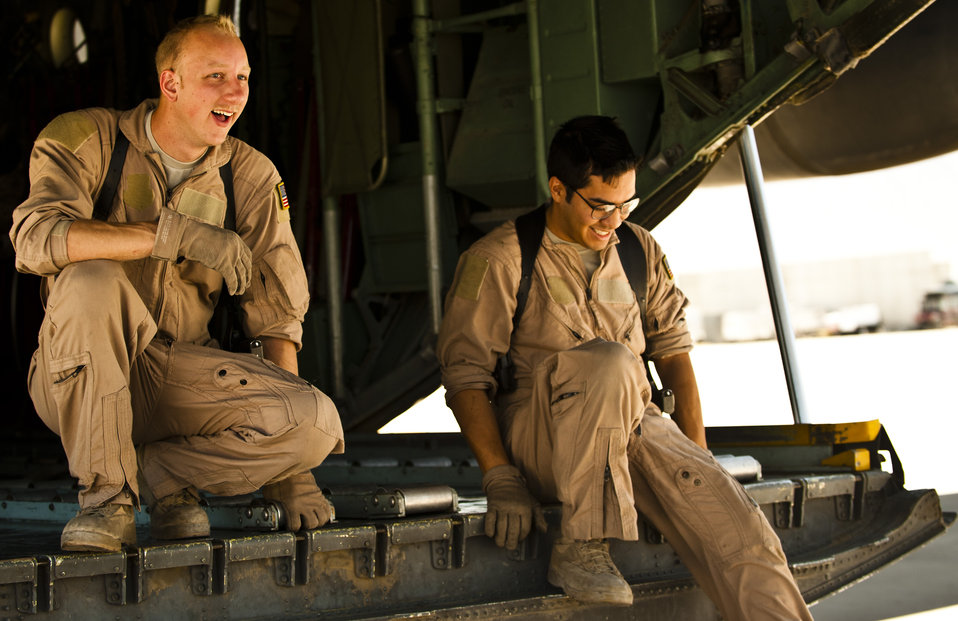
Hercules: A day in the life

Airman 1st Class Aaron Rishel, left, and Senior Airman Carlos Lopez share a laugh while preparing a C-130H Hercules for an airlift mission at Bagram Airfield, Afghanistan, June 2, 2012. Rishel and Lopez are loadmasters deployed to the 774th Expeditionary Airlift Squadron.